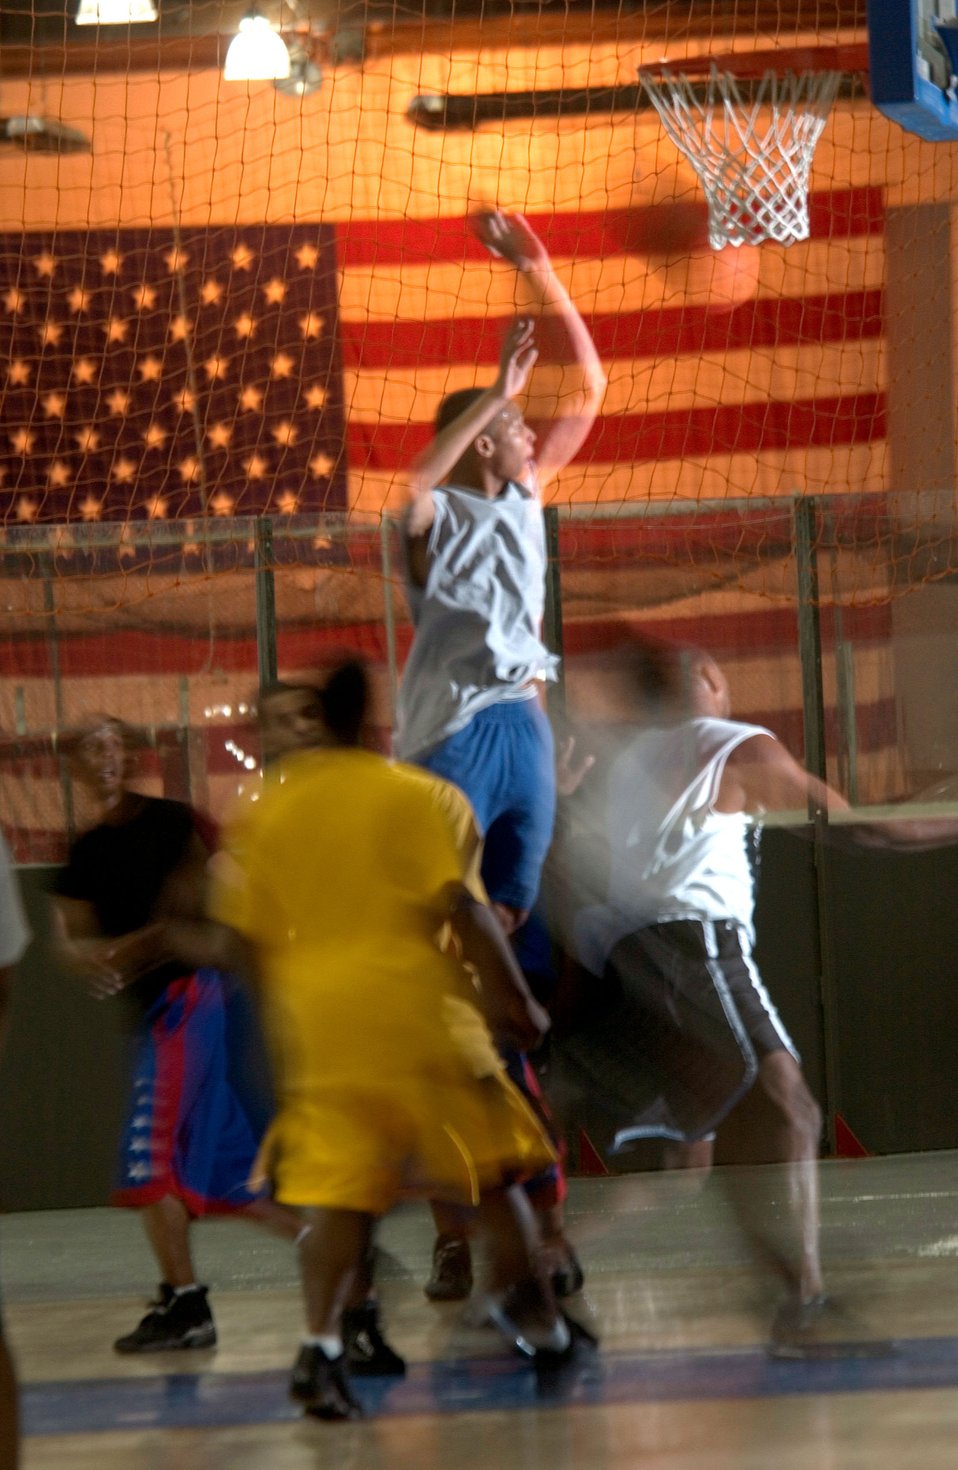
Hoop it up

OFFUTT AIR FORCE BASE, Neb. -- Airman 1st Class Tookie Johnson relaxes with a pick up game of basketball at the Field House fitness center here. He is assigned to the 55th Security Forces Squadron.